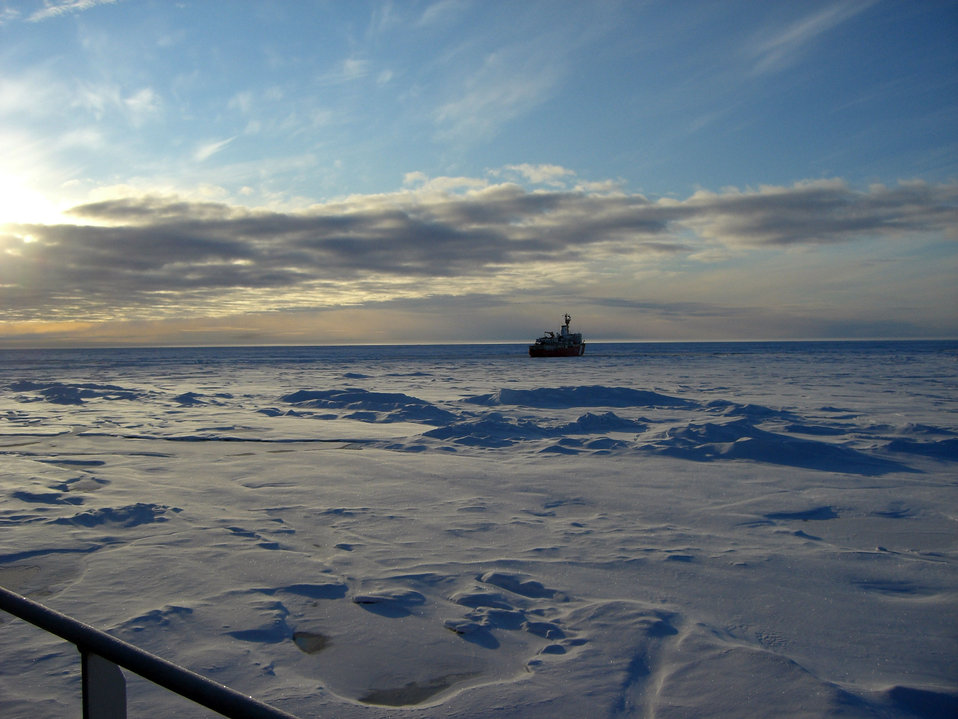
U.S.-Canada Fourth Joint Mission To Map the Continental Shelf in the Arctic Ocean

Views of the U.S.-Canada fourth joint mission to map the continental shelf in the Arctic Ocean in August and September 2011. The 2011 joint mission employed the flagship icebreaker from each country, the U.S. Coast Guard Cutter Healy and the Canadian Coast Guard Ship Louis S. St-Laurent (LSSL), with each ship performing different functions and one ship breaking ice for the other.